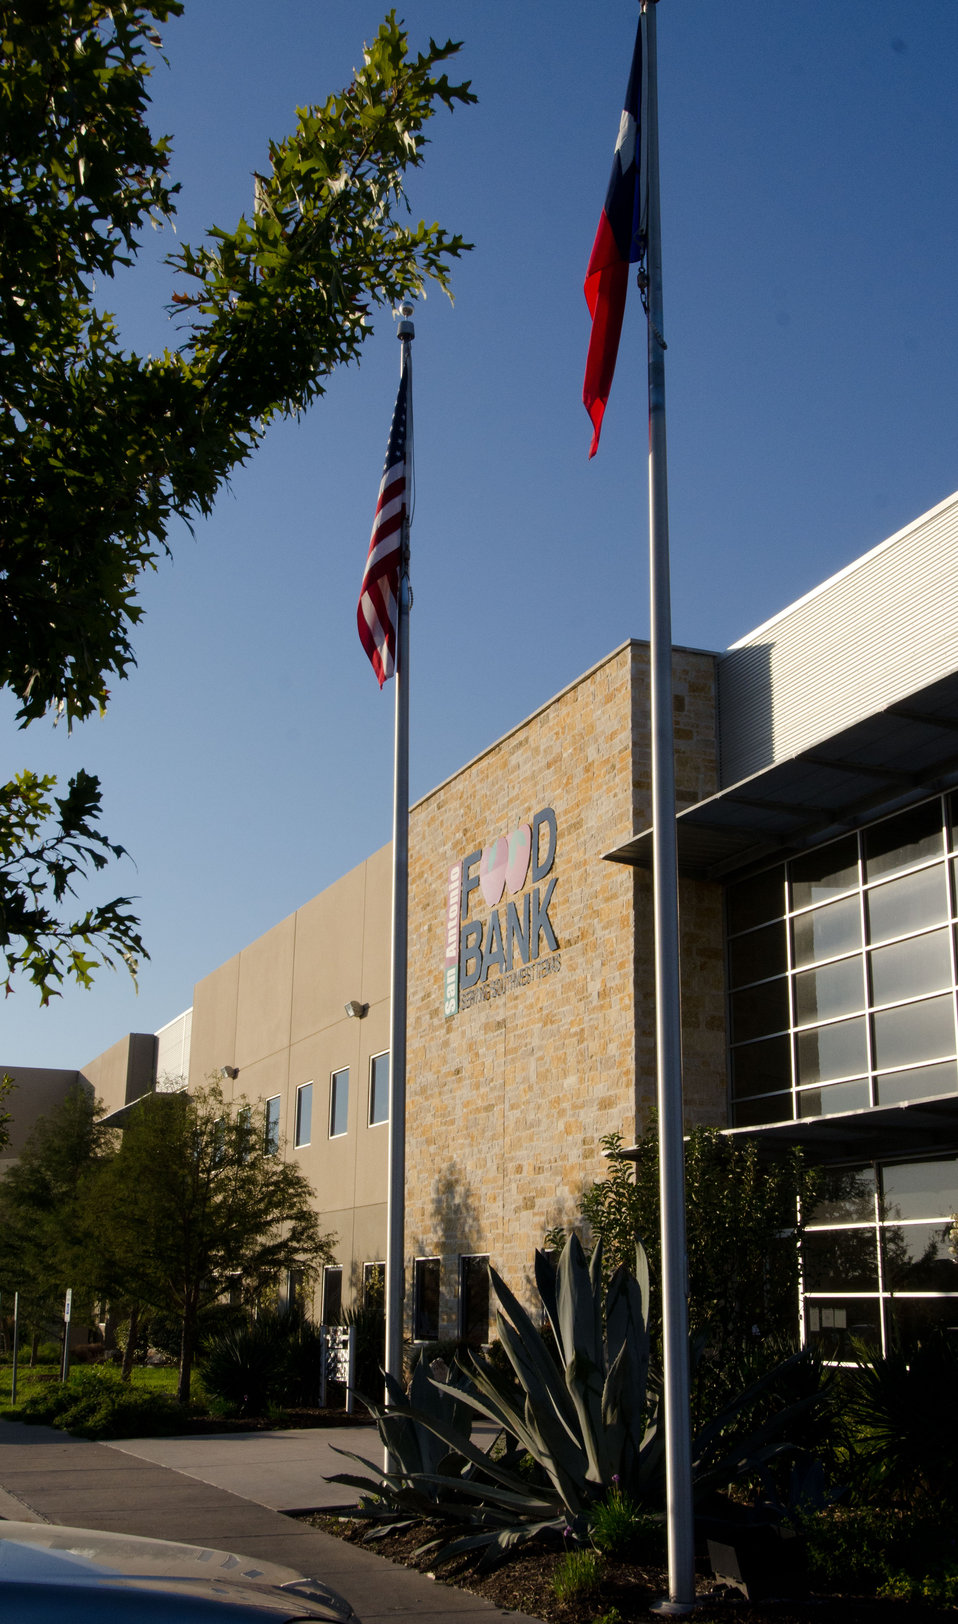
The San Antonio Food Bank (SAFB) is a non-profit organization that serves as a clearinghouse by receiving and storing truckloads of donated food, produce, and other grocery products in San Antonio TX, on Monday, October 31, 2011. SAFB distributes these items to over 500 service agencies that help people in need.
“We couldn’t do what we do without our partnership with USDA’” said President and CEO Eric Cooper. He continues, “We are privileged in partnering (with the USDA) to feeding kids, through the summer, with the Summer Food Service Program, and throughout the year, with the Child and Adult Care Feeding Program (CACFP). Then in our approach to feeding seniors, we partner with USDA in the Commodities Supplemental Food Program (CSFP), and the Senior Farmer’s Market (Nutrition) Program. And then work to bring all our (needy) parties together with our Supplemental Nutrition Assistance Program (SNAP) Outreach. You know, once families have access to food we believe it is important to educate them. Through the support of the SNAP-Education Program we are able to educate them during their time of need. With this comprehensive approach we are really able to get the right food, at the right amount, at the right time, to needy families throughout our community – which allows us to feed the fifty-eight thousand we do, each week.”
SAFB serves 16 counties in Southwest Texas and states, “Nearly one out of every four children and one out of every five adults in Southwest Texas lives in poverty and has difficulty meeting basic nutritional needs.” According to SAFB, sixty-five percent of the people requesting emergency food have children. “Additionally, the senior citizens and those living on a fixed income generally have limited funds for a consistent grocery budget.”
San Antonio is the seventh largest city in the nation with surrounding farms and ranches near its rivers and water supplies. When available they provide fresh surplus produce. Other commodities come from the food industry and manufacturers. The major food brand companies that for various reasons have surplus commodities donate it to SAFB.
The United States Department of Agriculture donates commodities through programs such as The Emergency Food Assistance Program (TEFAP), while Texas farmers supply fresh produce to their Fresh Produce Program.
Public donations come in the form of money, food, volunteer time, and advocacy. Their fleet of trucks to pickup and deliver food as needed.